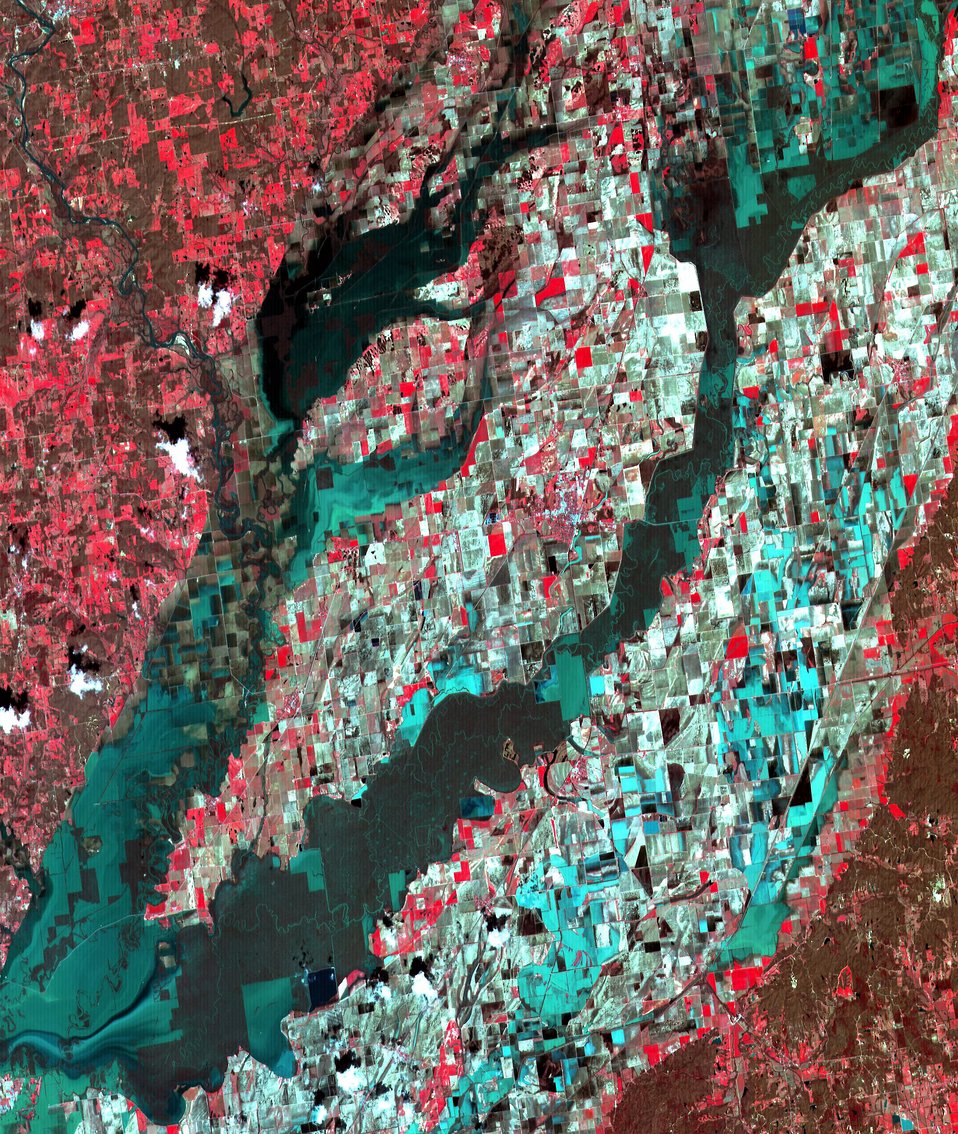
Airmen help flooding recovery efforts

An Eagle Vision satellite image shows a flooded area in Knobel, Ark. Farmland appears as red boxes, while darker red shows partially submerged farmland. Green boxes detail property completely submerged by water.